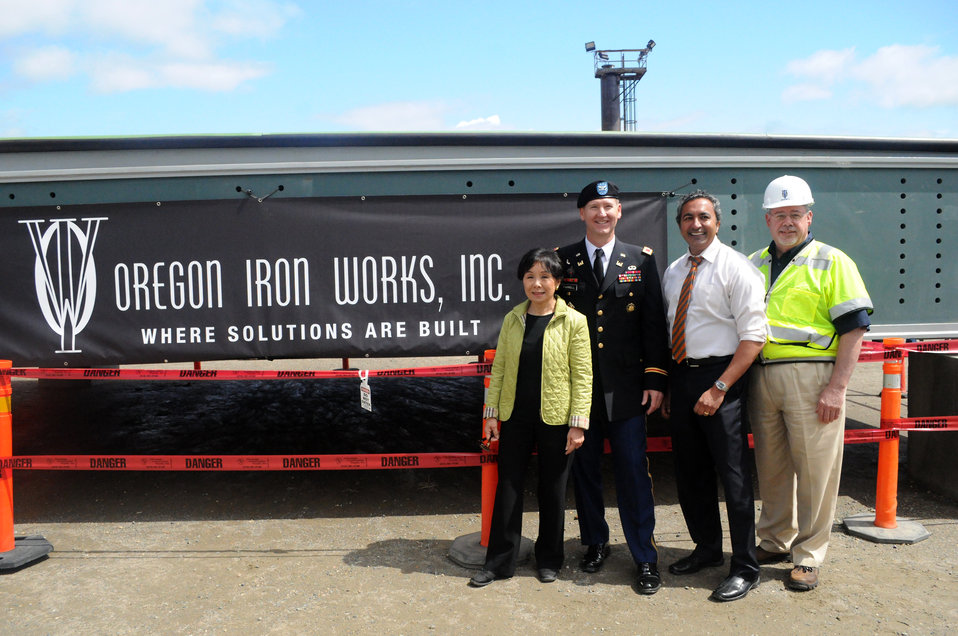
Corps hosts elected officials, partners to celebrate progress on Folsom spillway

(From left) Representative Doris Matsui, U.S. Army Corps of Engineers Sacramento District commander Col. Michael Farrell, Rep. Ami Bera and Oregon Iron Works vice president Patrick Leonard pose for a picture in front of a bulkhead gate for the new auxiliary dam April 26, 2014 in Folsom, Calif. The bulkhead gate is the first of 12 giant gates that are being trucked more than 600 miles from Vancouver, Wash., to the project site for installation on the auxiliary spillway project, which is a $900-million cooperative effort to improve the safety of Folsom Dam and reduce flood risk for the Sacramento area.